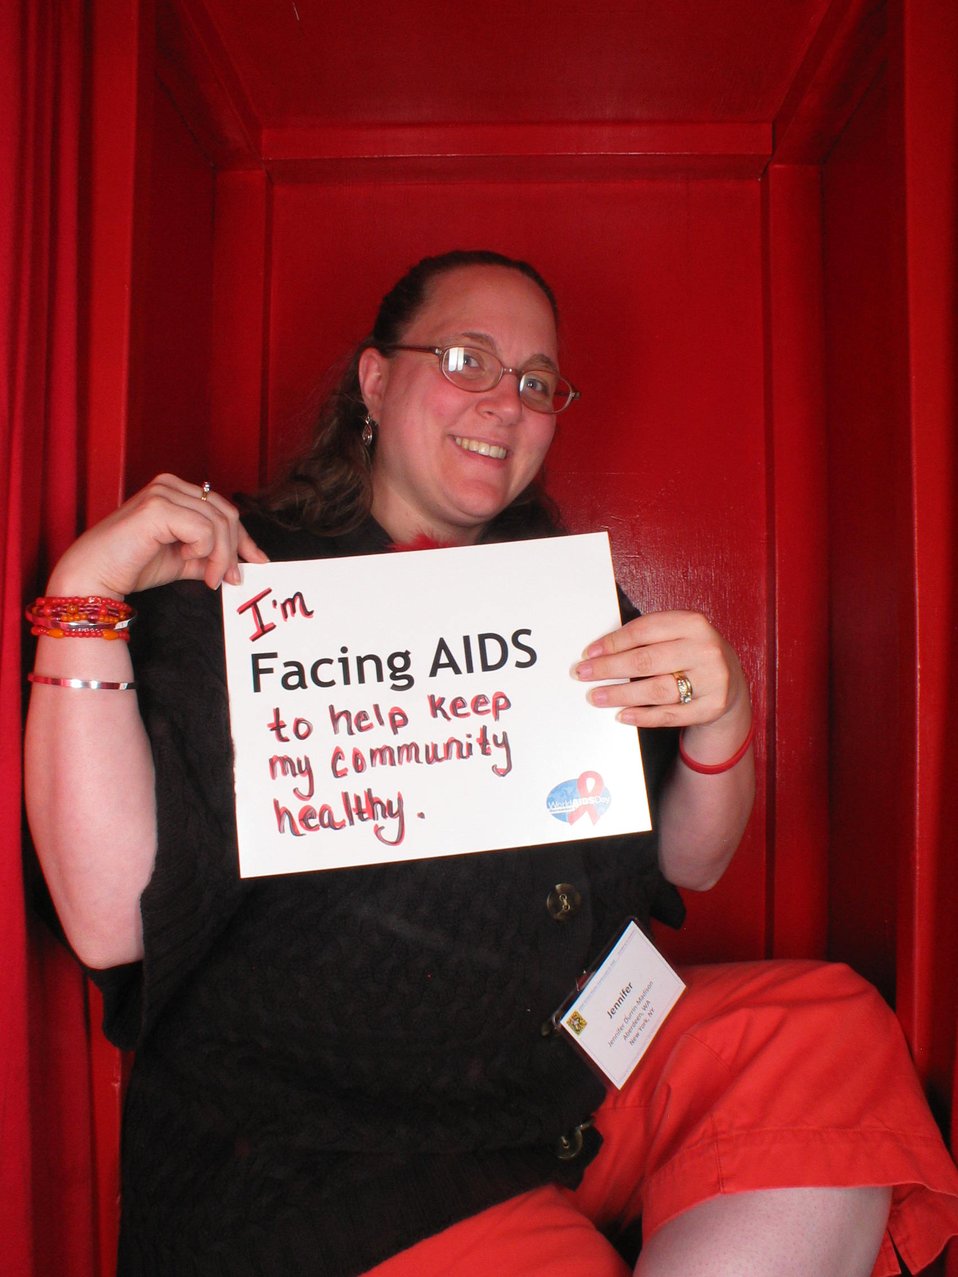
I'm Facing AIDS to help keep my community healthy.